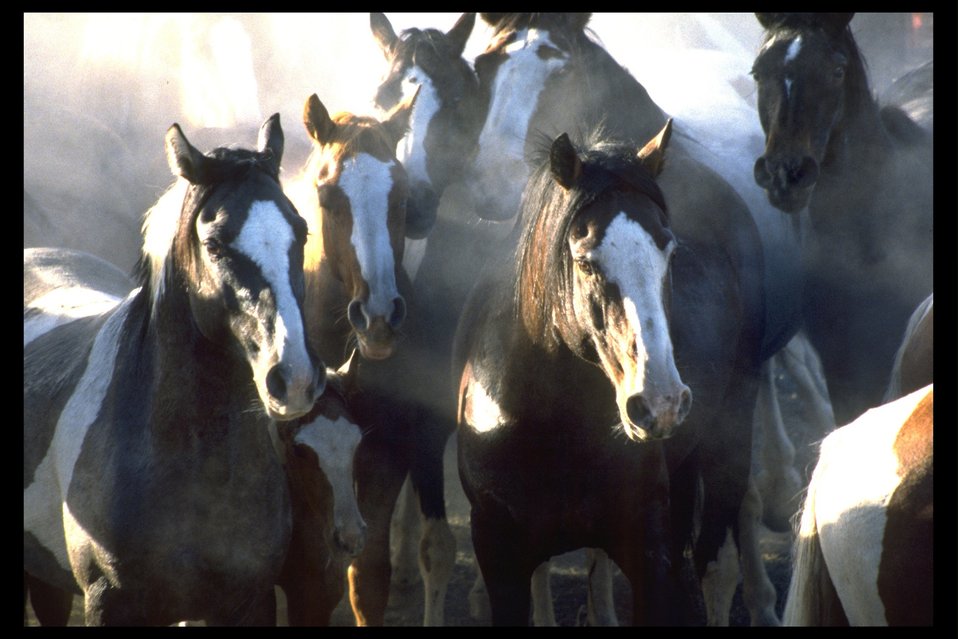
South Steens wild horses at a trap in the Burns District.